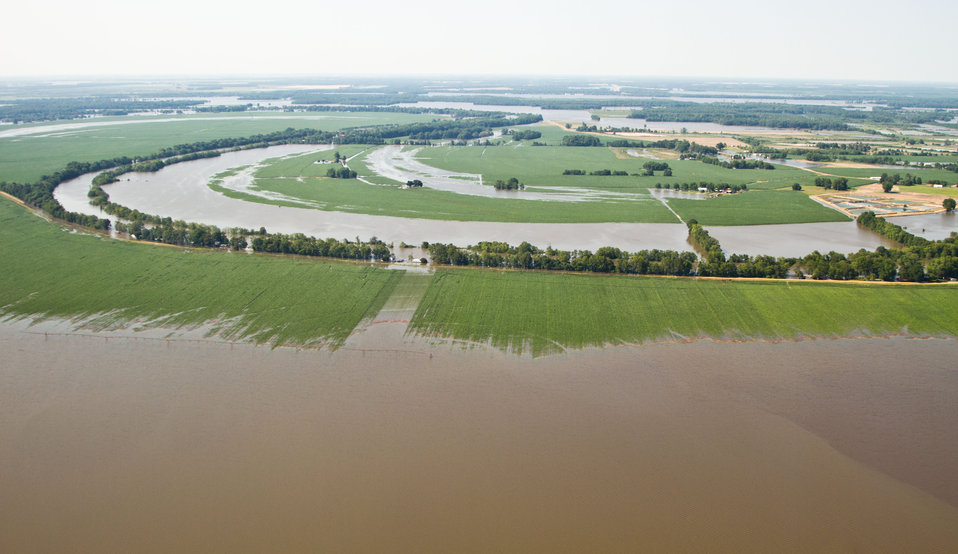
Aerial view of Mississippi River flood of farms, wilderness, and populated areas, on Thursday, May 19, 2011. from the MS side. Aerial platform was a UH-60 Blackhawk commanded by Col. Kennedy and his flight crew from the Army Aviation Support Facility #1 at Hawkins Field in Jackson, MS.